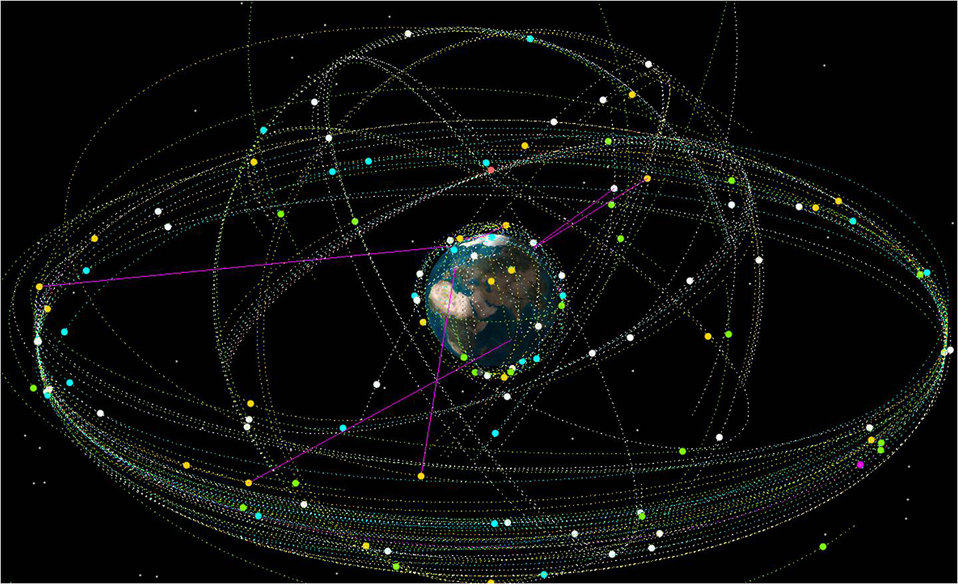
50 SW sharpens focus on contested environment

A graphic depicting satellites and their orbits demonstrates how the space around Earth is contested and congested.